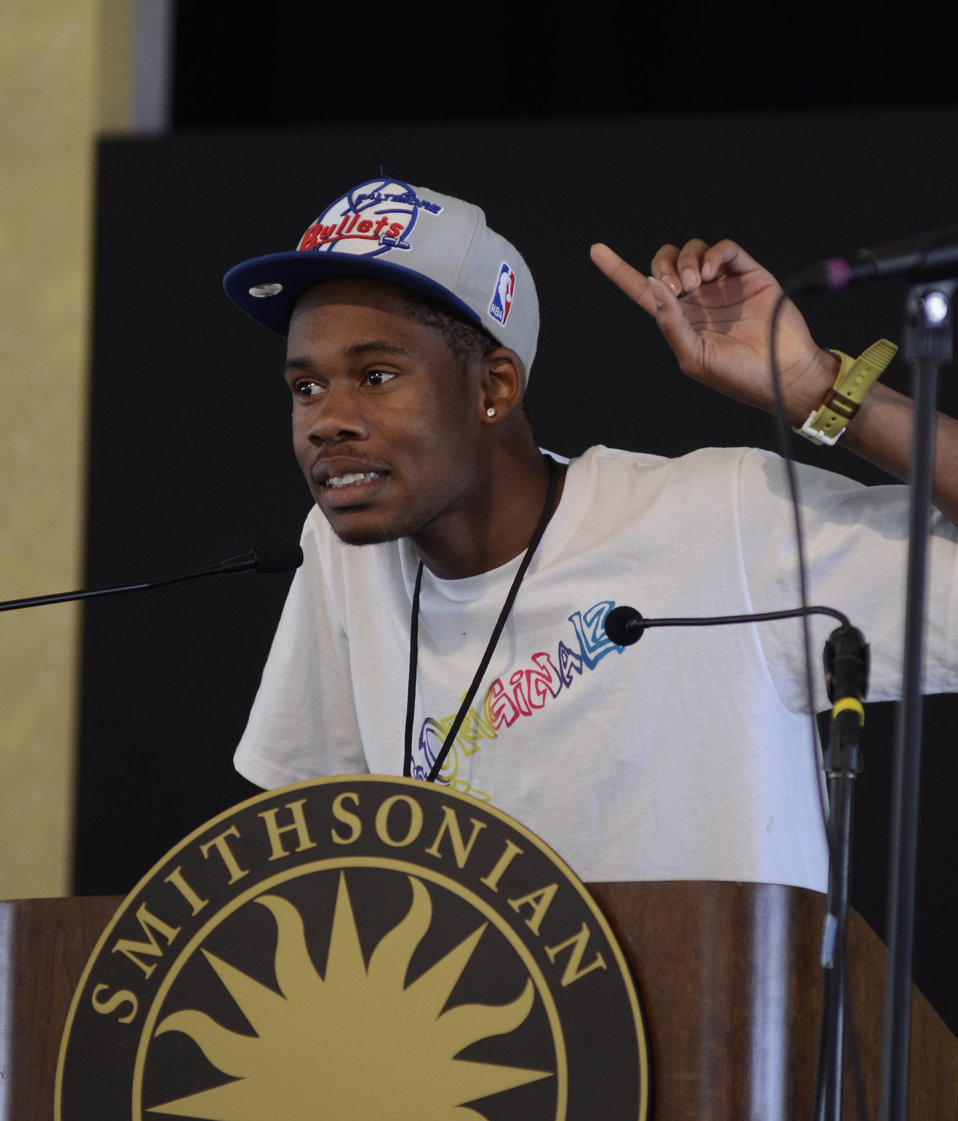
A Da Originalz crewmember speaks at the opening ceremony for the 2012 Smithsonian Folklife Festival in Washington, D.C, on Wednesday, June 27, 2012. This year’s festival features three themes; “Creativity and Crisis” celebrates the 25th anniversary of the AIDS Memorial Quilt, “Citified,” explores the rich culture and community of neighborhoods east of the Anacostia, and the third “Campus and Community” celebrates 150 years of USDA and the Land-Grant university system.